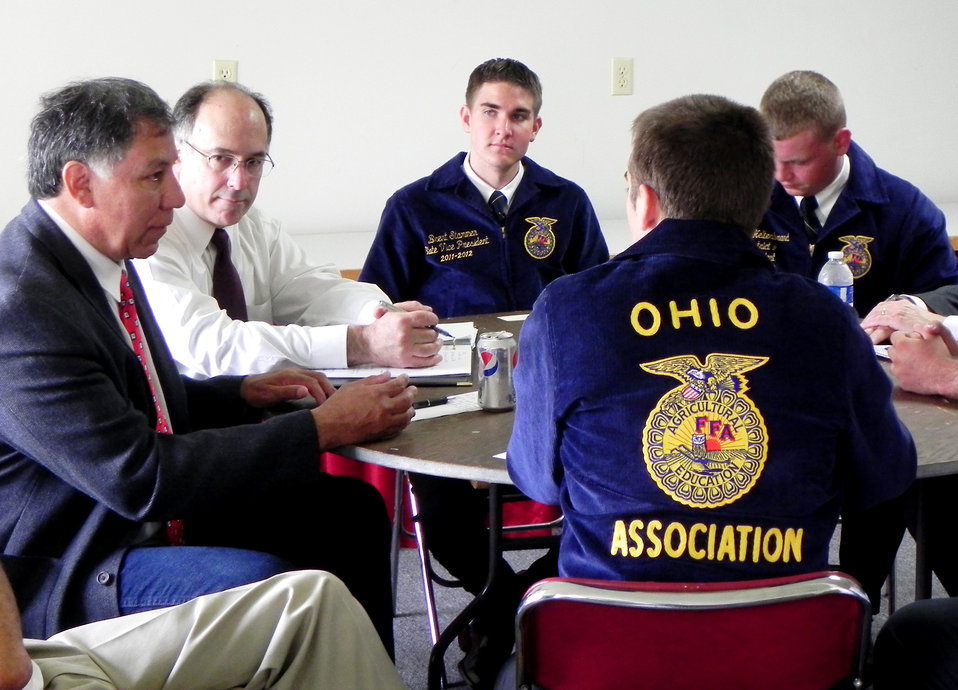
Agriculture Under Secretary for Marketing and Regulatory Programs Ed Avalos visit with Future Farmers of America (FFA) leadership during his visit to the Ohio State Fair in Columbus, OH on Tuesday, Aug. 2, 2011. Under Secretary Avalos attended the Ohio State Fair to host a Rural Roundtable meeting with agricultural producers and rural business leaders to explore ways federal, state and local officials can work together to improve economic conditions and create jobs. This meeting is part of a series of White House Rural Roundtables that are being held across the country this summer with senior Administration officials on behalf of the White House Rural Council.